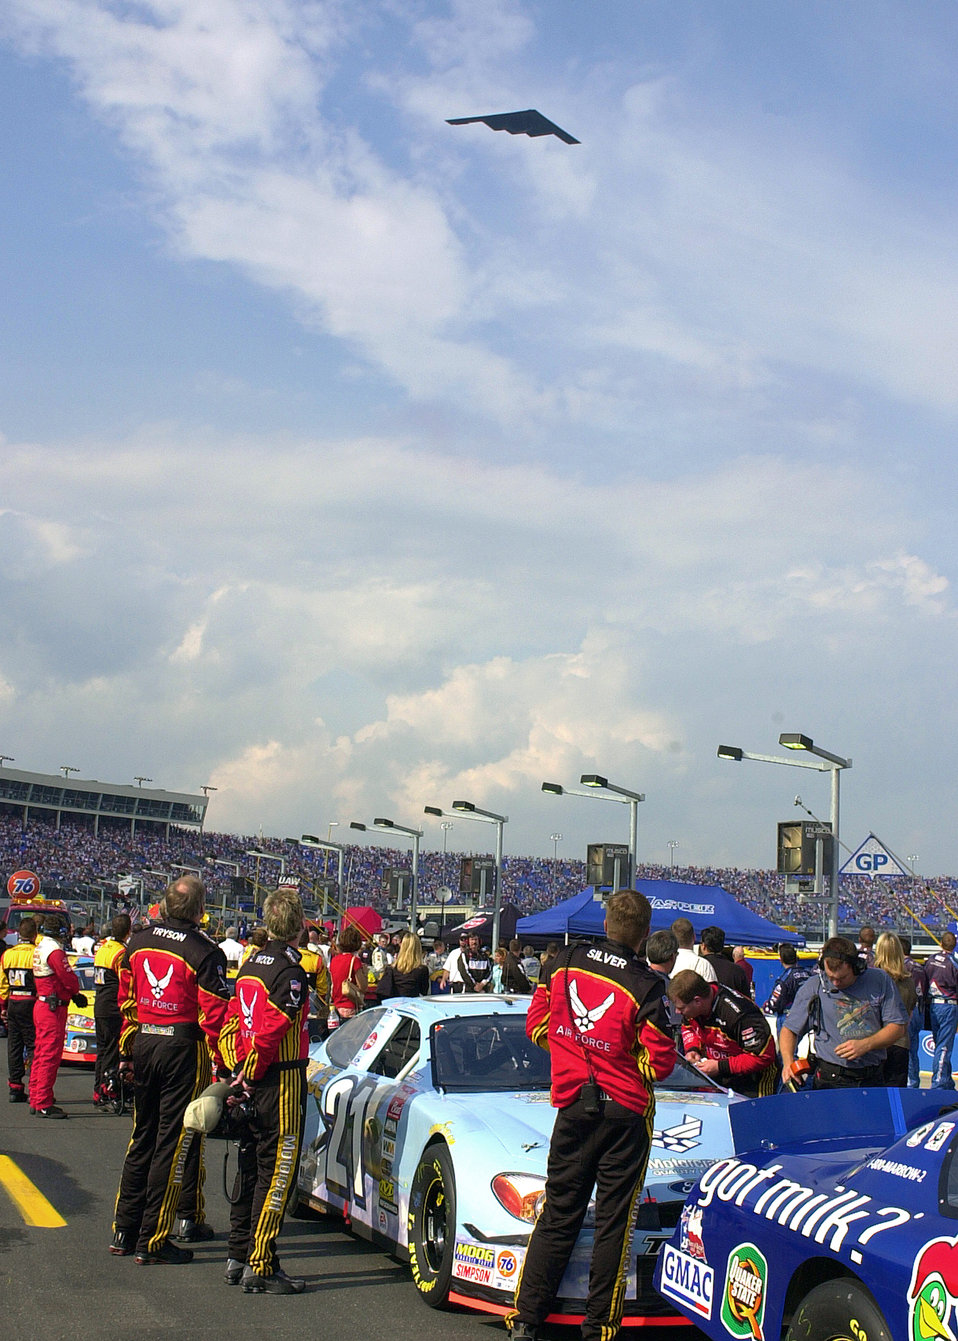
Coca-Cola 600 fly over

CONCORD, N.C. -- Members of the Wood Brothers Race Team watch a B-2 Spirit stealth bomber fly over their Air Force Centennial of Flight race car. The B-2 conducted the flyover during pre-race ceremonies for the NASCAR Coca-Cola 600 at Lowe's Motor Speedway here May 25. The Air Force car carried a patch from the 333rd Fighter Squadron at Seymour Johnson Air Force Base, N.C., in honor of Maj. William Watkins and Capt. Eric Das, an F-15E Strike Eagle crew killed in action during Operation Iraqi Freedom. Watkins and Das performed the flyover for the 2002 Coca-Cola 600.